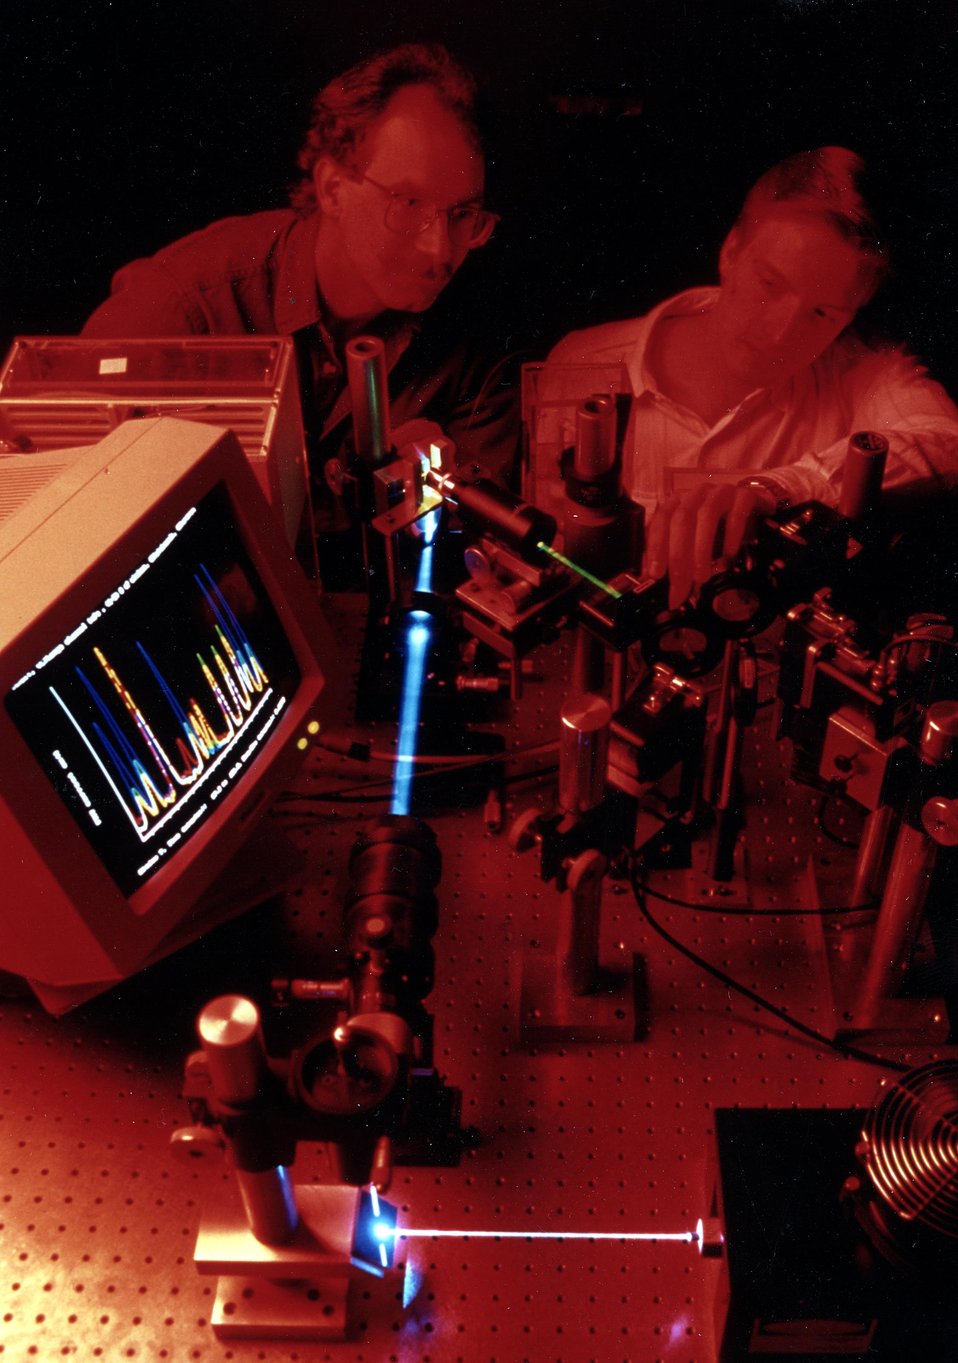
Hig-Speed DNA Sequencing. Researchers demonstrate a laser-based procedure for determining the sequence of bases in a DNA fragment during capillary electrophoresis. c. 1991